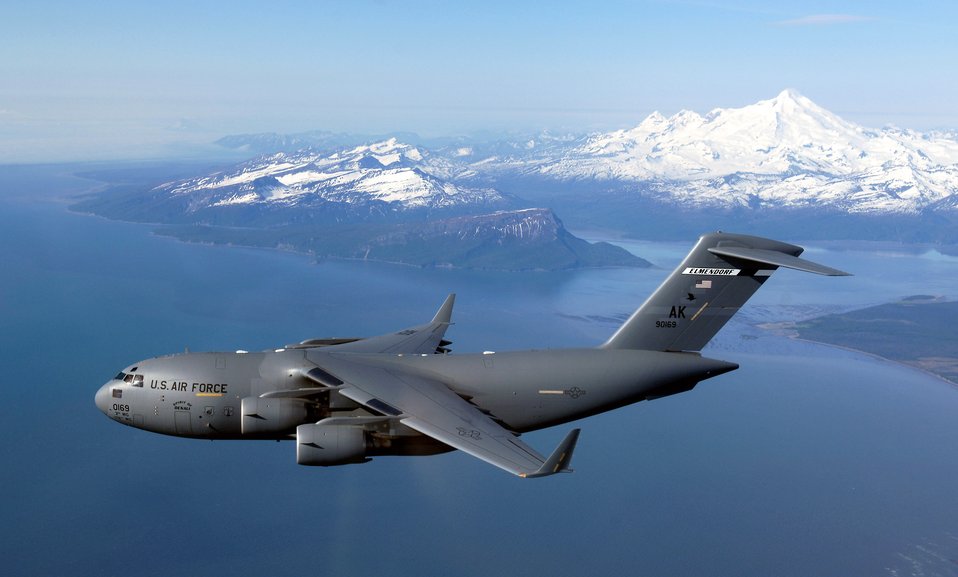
Elmendorf celebrates C-17 arrival

The